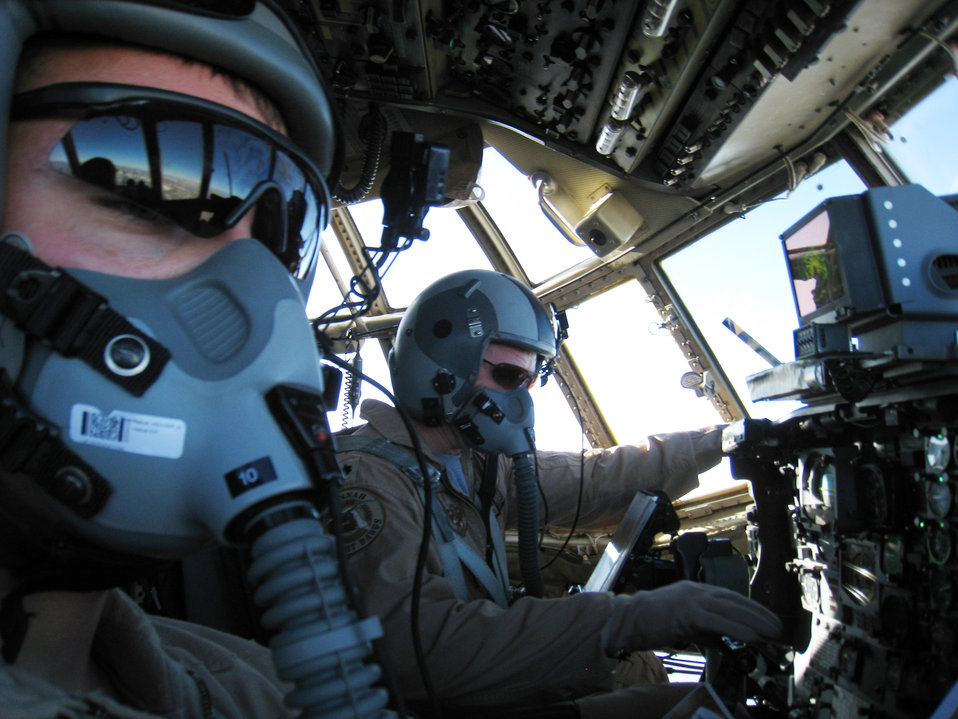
C-130 crew delivers humanitarian supplies to Afghan village

Lt. Col. Tommy Atkinson (right) pilots a C-130 Hercules over northern Afghanistan on a humanitarian airdrop mission Aug. 26. The Airmen of the 774th Expeditionary Airlift Squadron have been dropping an average of five to eight tons of supplies and equipment per mission to coalition forces and Afghan civilians in support of Operation Enduring Freedom.